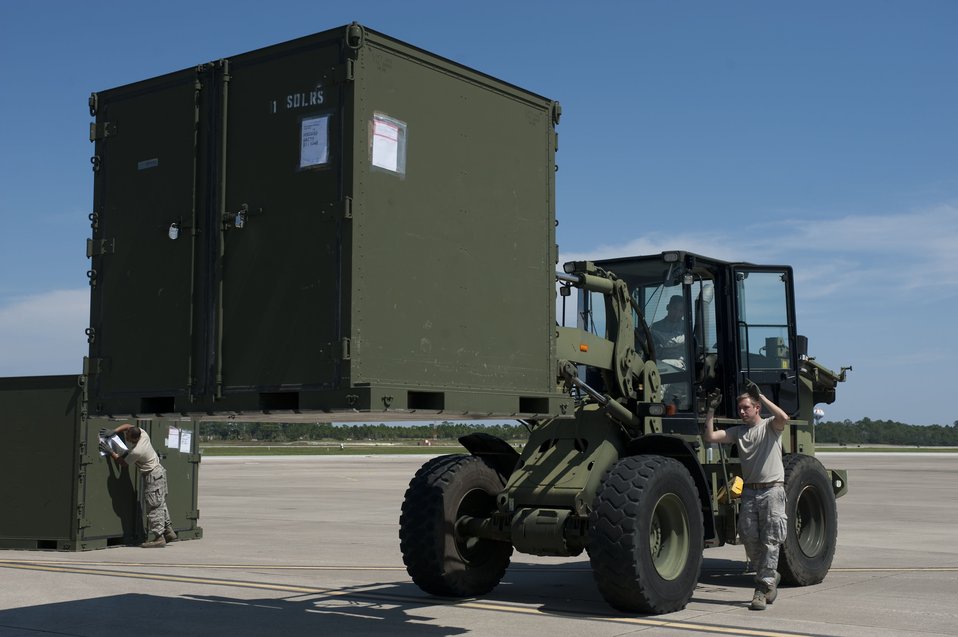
Tropical Storm Preparation

Staff sergeants Alex Lee Hooper and Sophist Ly load a box of supplies onto a C-130 at the flightline on Hurlburt Field, Fla., Aug. 26, 2012. Hurlburt Field assets were being evacuated as Tropical Storm Isaac approaches the Gulf Coast Region. Hooper is a an air transportation journeyman and Sophist Ly is an air transportation craftsman; both are with the 1st Special Operations Logistics Readiness Squadron.